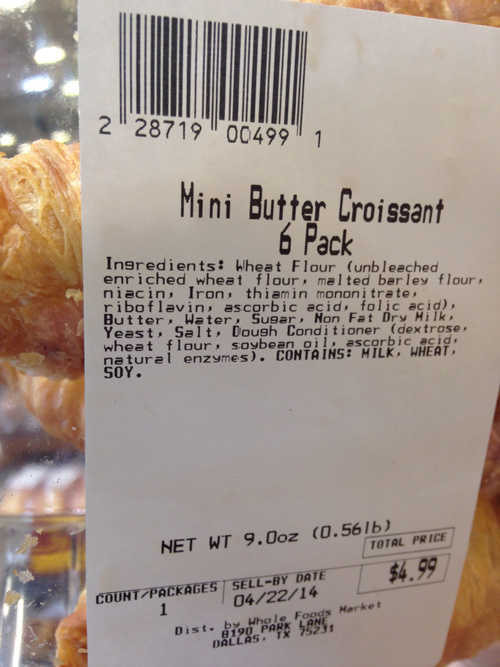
RECALLED – Mini Butter Croissants

April 18, 2014 – Whole Foods Market Southwest Region Recalls Mini Butter Croissants Due to Undeclared Egg.